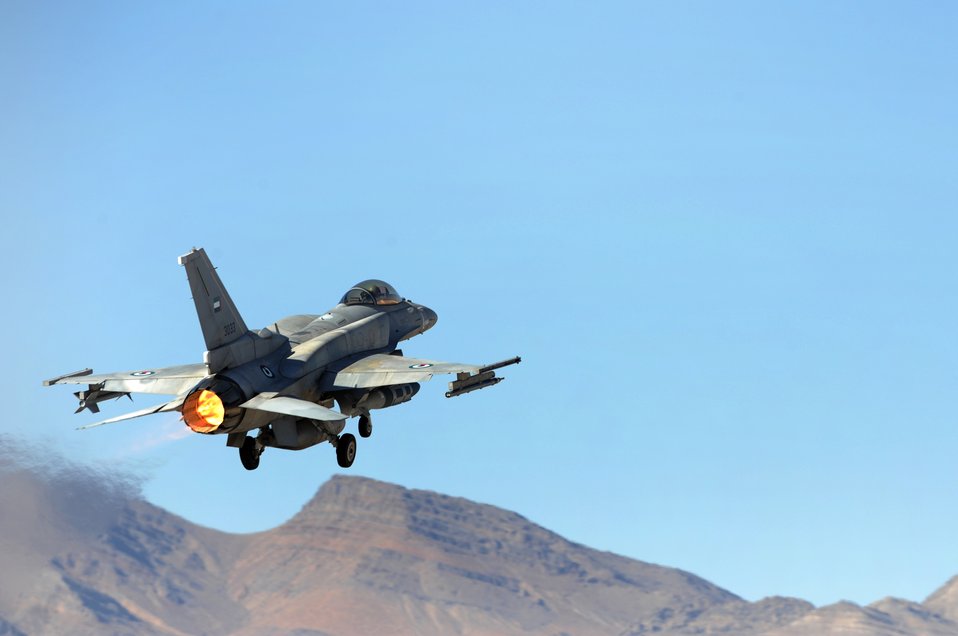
Red Flag trains combat air forces

An F-16E from the United Arab Emirates takes off for a training mission during Red Flag Aug. 26, 2009, at Nellis Air Force Base, Nev. This is the first time the nation has participated in Red Flag, a realistic two-week air combat training exercise conducted over the 15,000-square-mile Nevada Test and Training Range north of Las Vegas. The exercise ends Sept. 4.